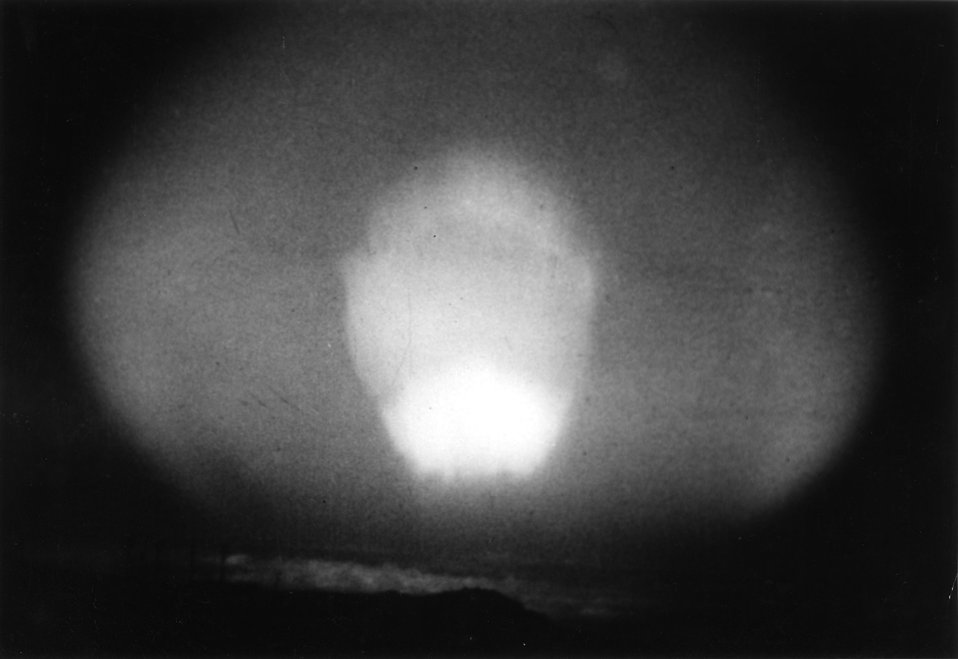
Fireball and red luminous spherical wave formed after the TEAK high-altitude shot, taken 780 miles from the explosion.